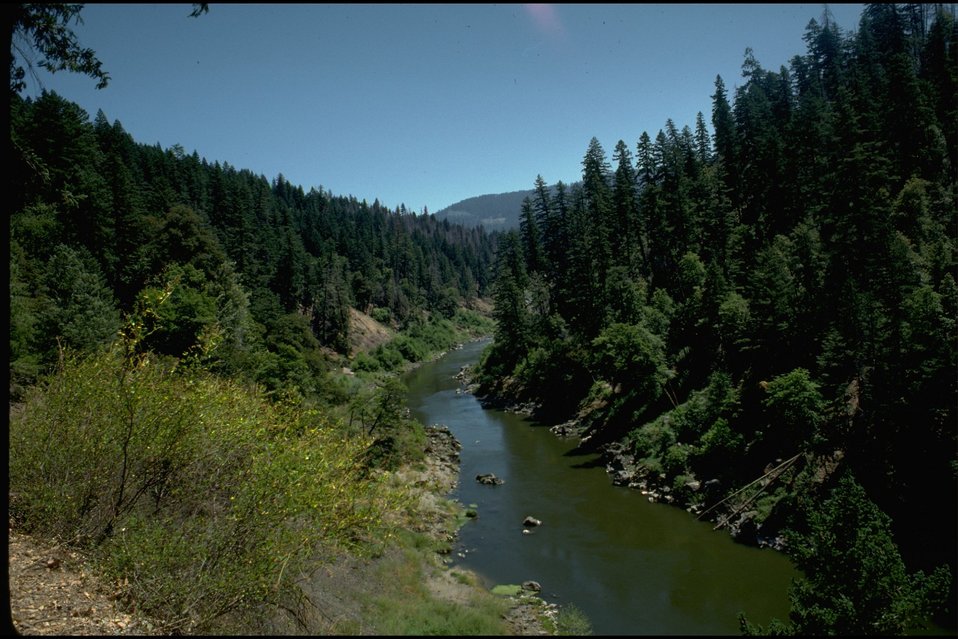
Rogue River - Near Rogue River Ranch, wild section. Just around bend from Ranch at old foot bridge looking east. Note: Timber sale in background in SW 1 14 08 Sec. 10.